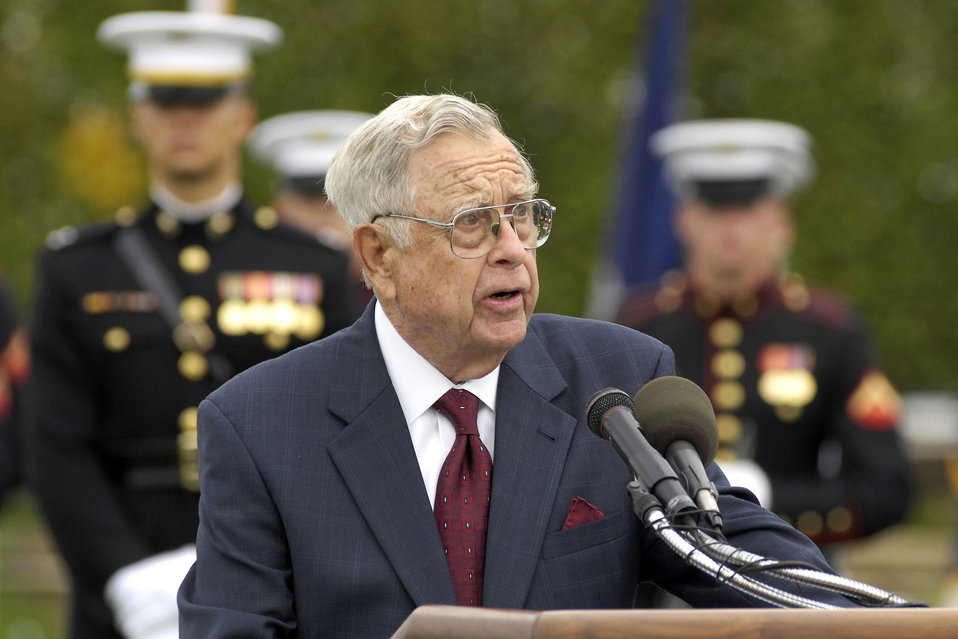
Pentagon ceremony salutes former POWs, missing in action

SRetired Rear Adm. Jeremiah A. Denton recalls his almost eight years of captivity in a North Vietnam prison camp during the National POW/MIA Recognition Day at the Pentagon, Sept. 18, 2009.